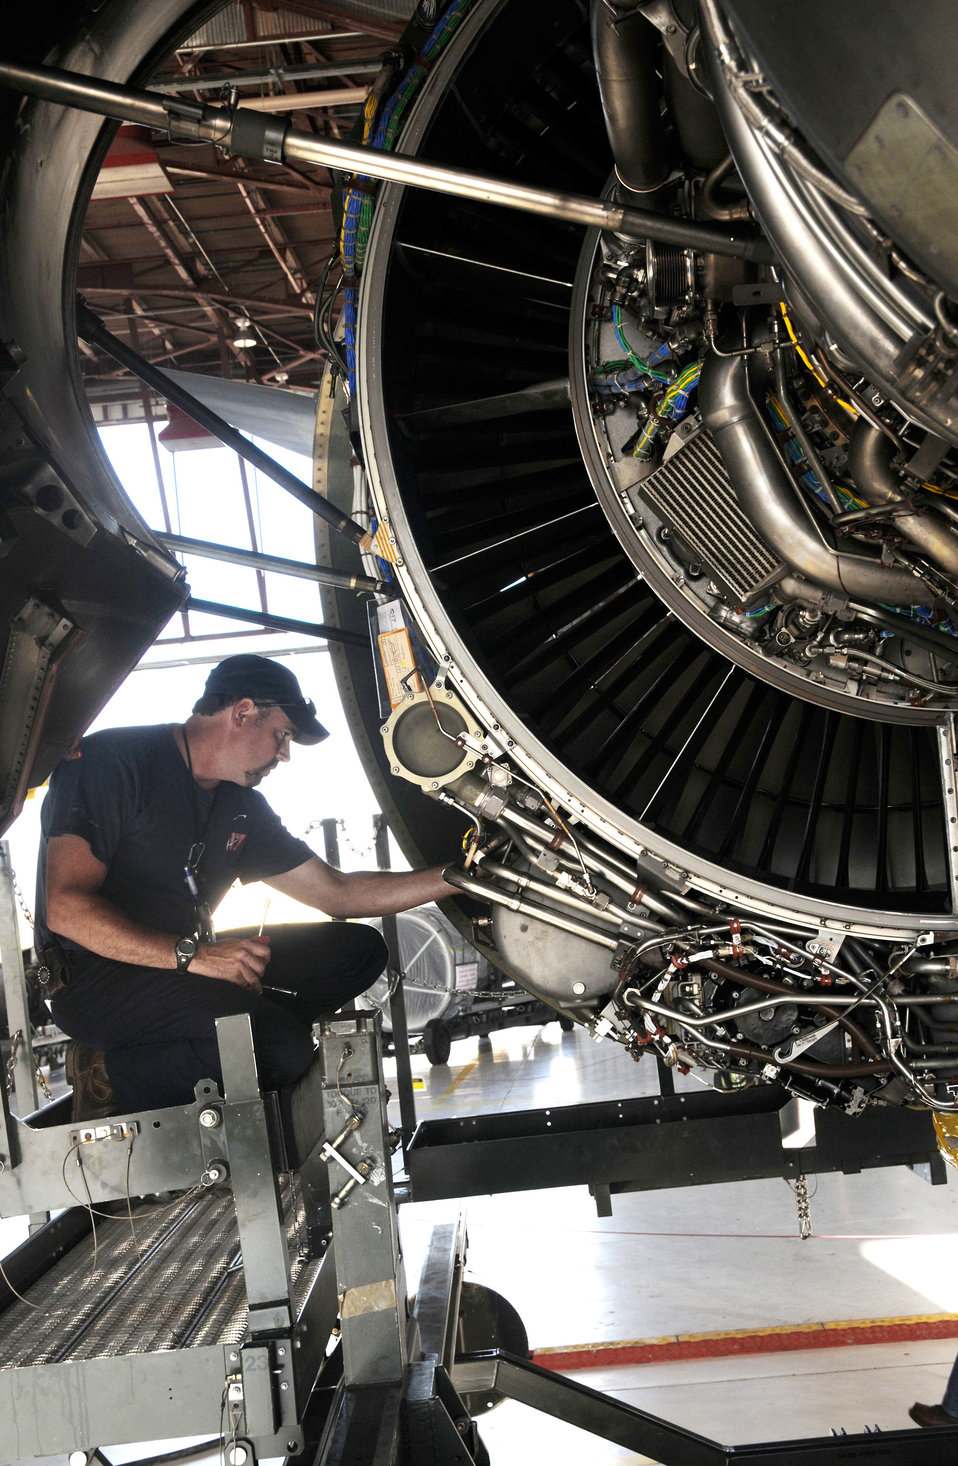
AFSO 21 improves C-17 inspection process

Ron Lucas, 97th Maintenance Directorate C-17 Globemaster III jet engine mechanic, works on an engine replacement for a C-17 during a home station check here June 9.